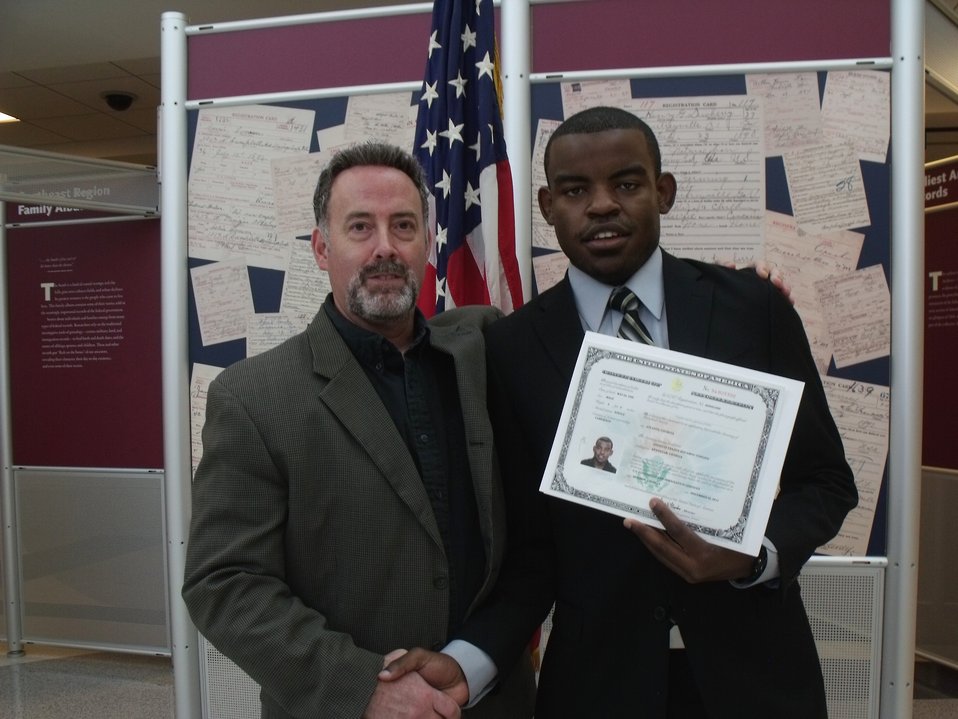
New Citizens